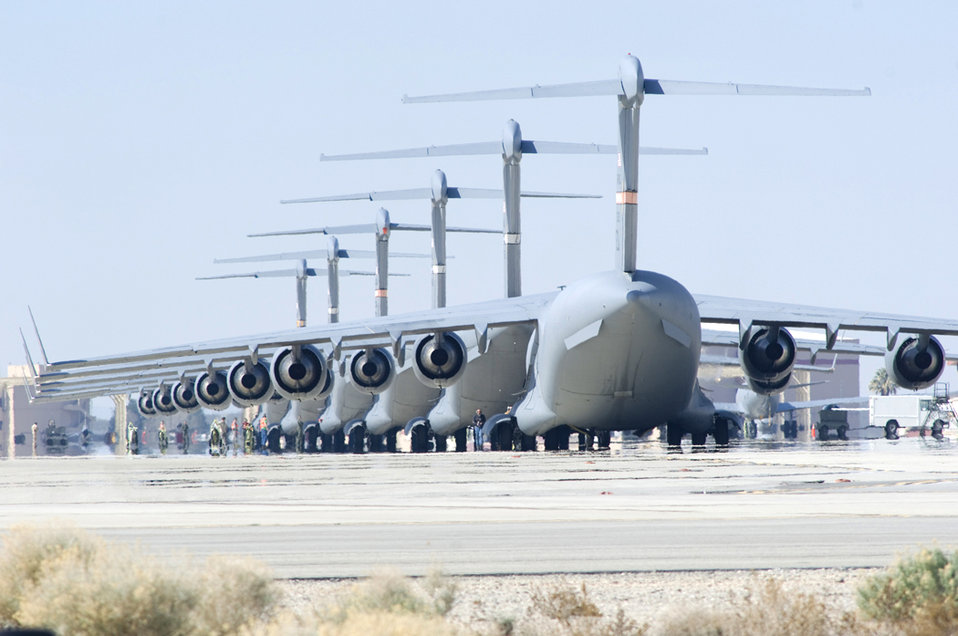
C-17s invade Edwards sky

C-17 Globemaster IIIs sit on the flightline at Edwards Air Force Base, Calif., in preparation for six-ship formation testing. The C-17 is capable of rapid strategic delivery of troops and cargo to main operating bases or directly to forward bases in deployed environments.